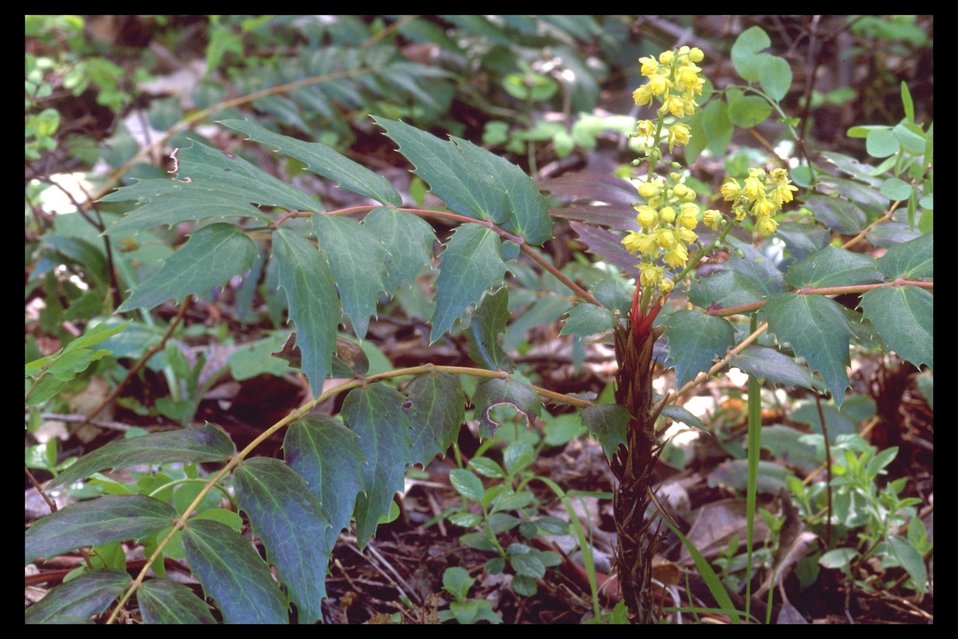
Dwarf Oregon Grape (Berbis nervosa) in the vicinity of Lost Creek Lake.